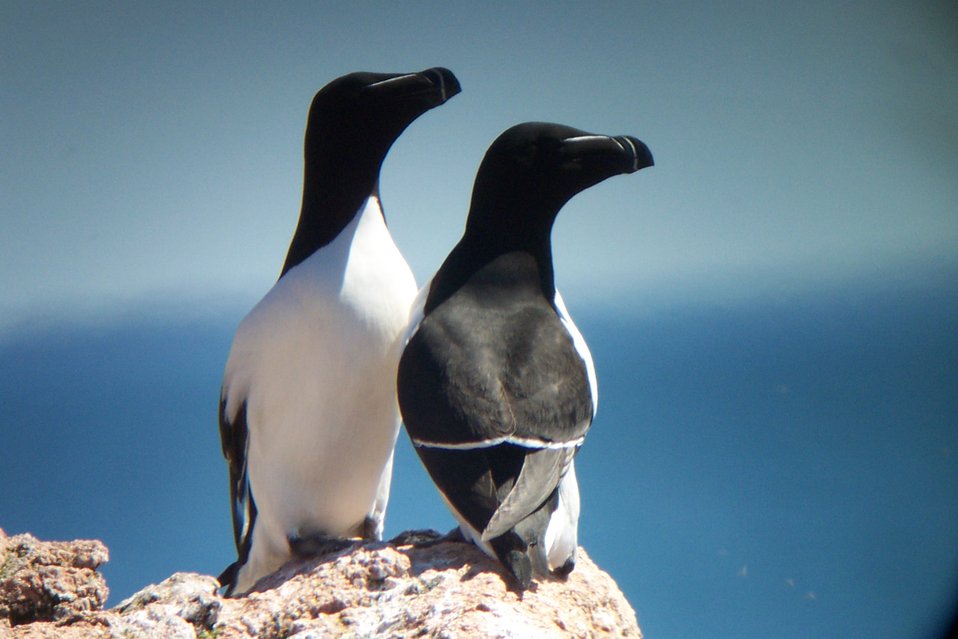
Razorbills at Maine Coastal Island National Wildlife Refuge